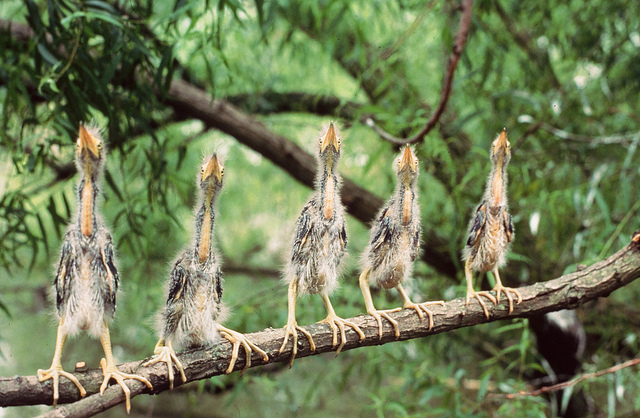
young green herons on a branch